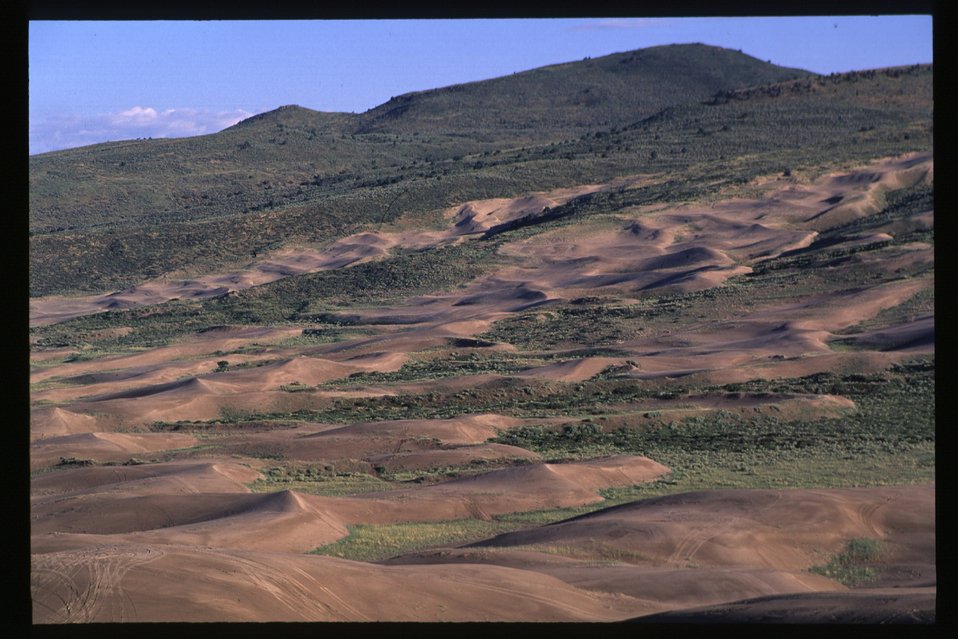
Recreation St Anthony Sand Dunes Overview Idaho Falls Field Office USRD Upper Snake River District